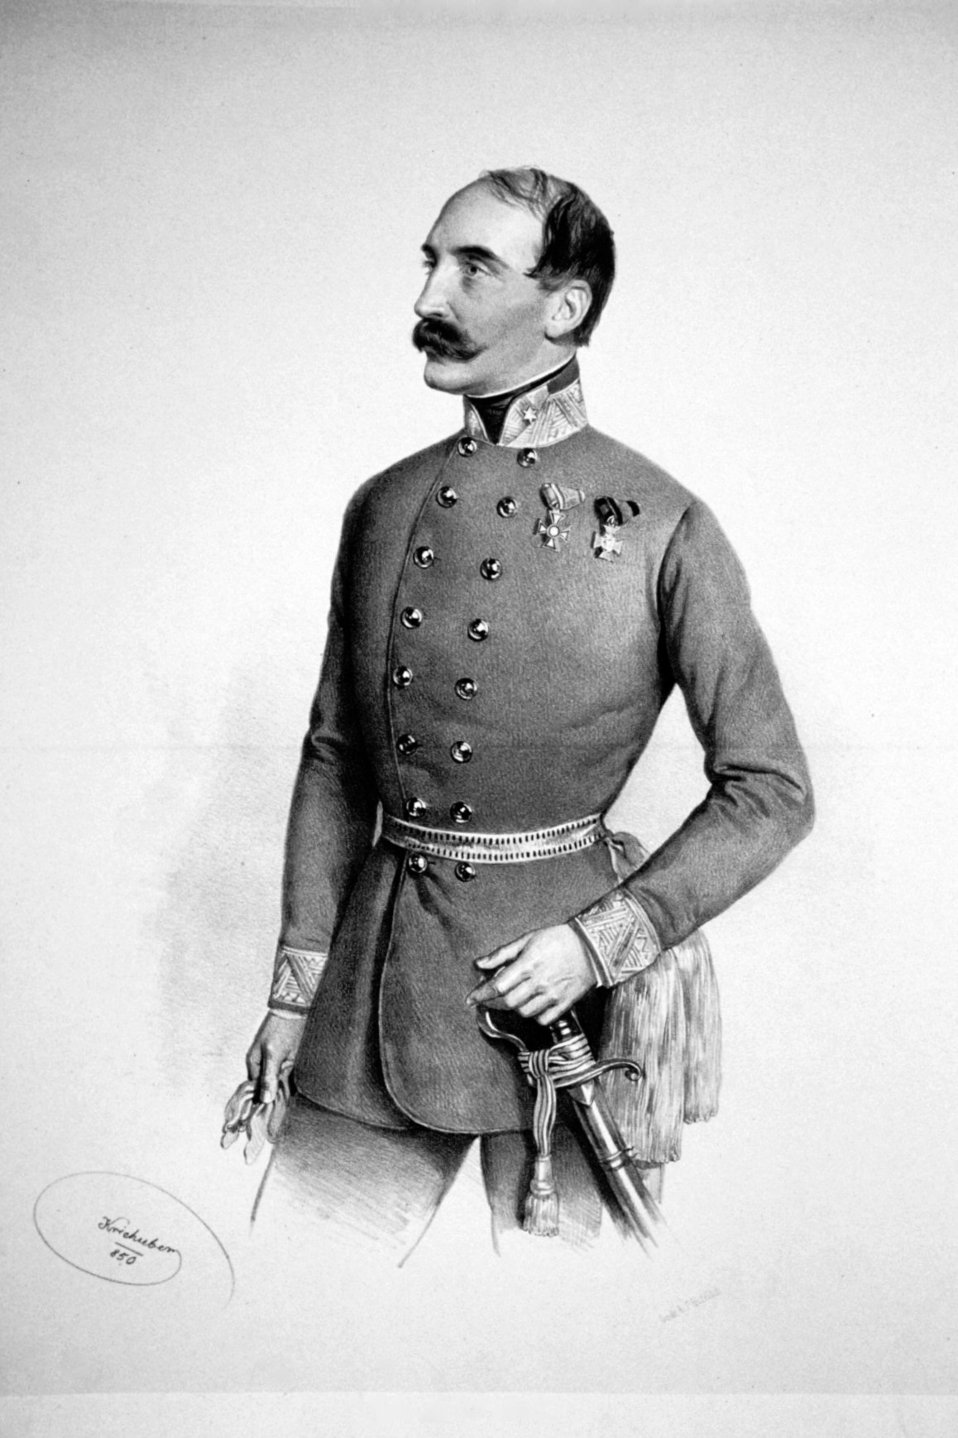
Anton Jellacic Litho